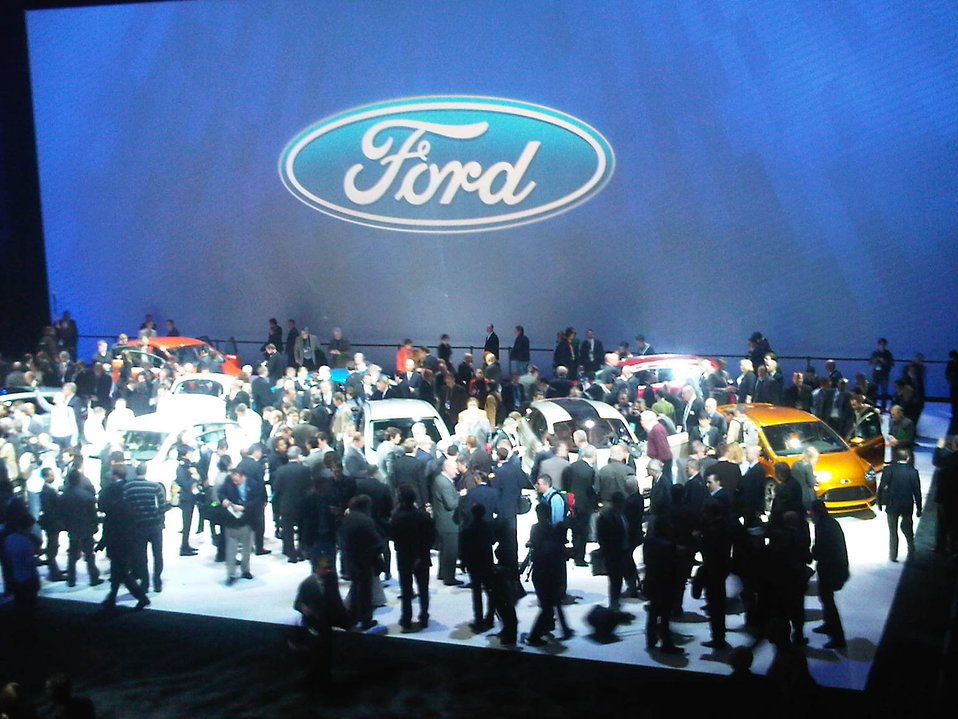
The 2011 Detroit Auto Show